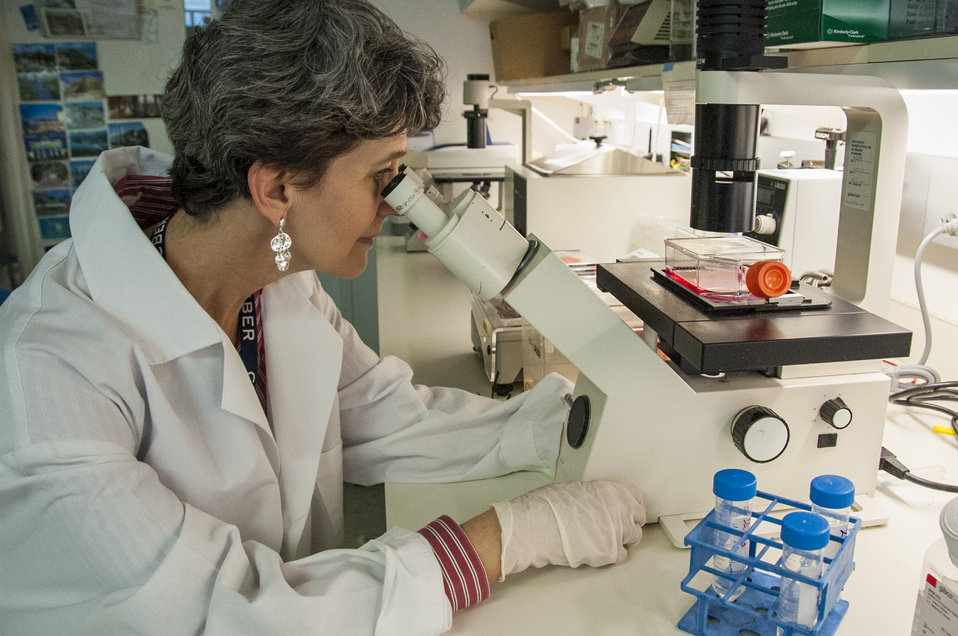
Bio Threats: FDA's A-Team (6355)

Carolyn Wilson, Ph.D., is associate director for research at FDA’s Center for Biologics Evaluation and Research. In her Bethesda, Md., laboratory, she researches the utility of pig cells, tissues and organs as materials for transplantation in humans.

Scientists at CBER work to facilitate the development of safe, effective treatments that would neutralize biological threats to public health and security. CBER regulates preventive and therapeutic vaccines, blood and blood products, human cell and tissue-based products, gene therapies and xenotransplantation. To learn more, read this FDA Consumer Update:

• FDA Teams Prepare for Biological Threats